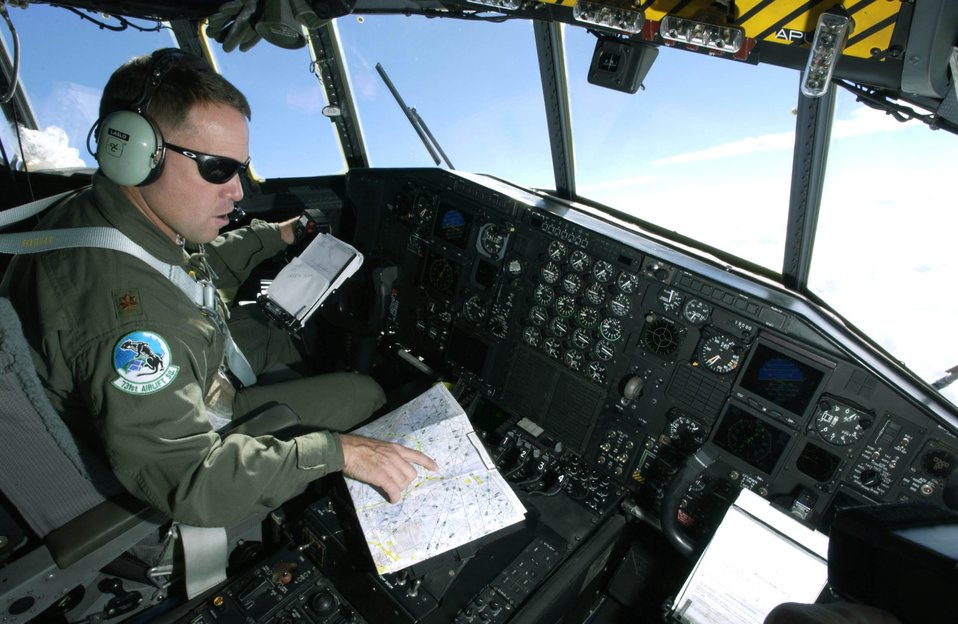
Flying high

OVER BOSNIA-HERZEGOVINA -- Maj. Dave Laslo checks his map en route to Tuzla Air Base and Pristina, Kosovo, before returning to Ramstein AB, Germany. He is a C-130 Hercules pilot with the 731st Airlift Squadron at Peterson Air Force Base, Colo. The squadron is temporarily assigned to Ramstein.